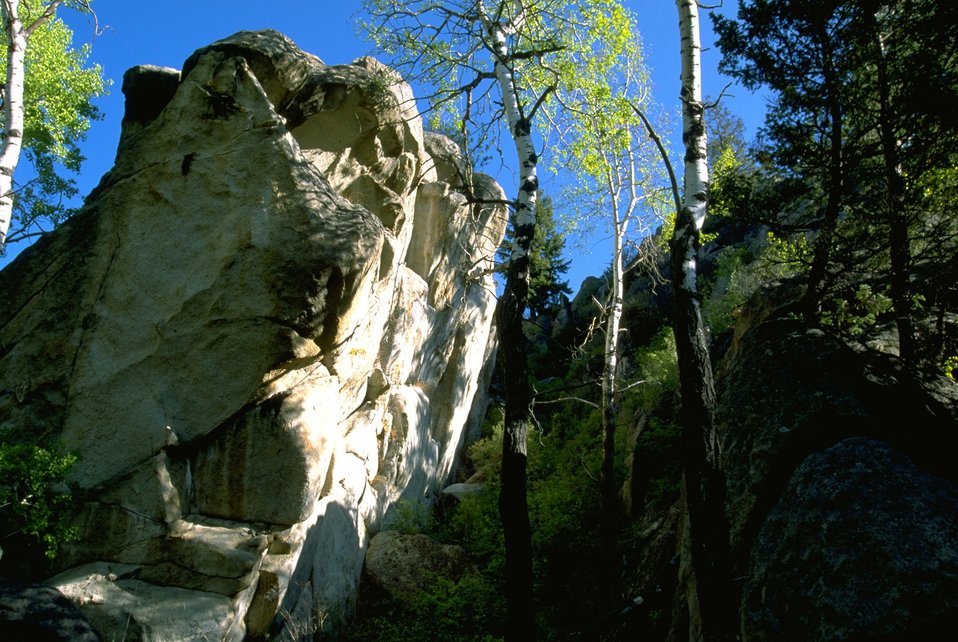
Large rock formation in the Humbug Spires Wilderness Study Area